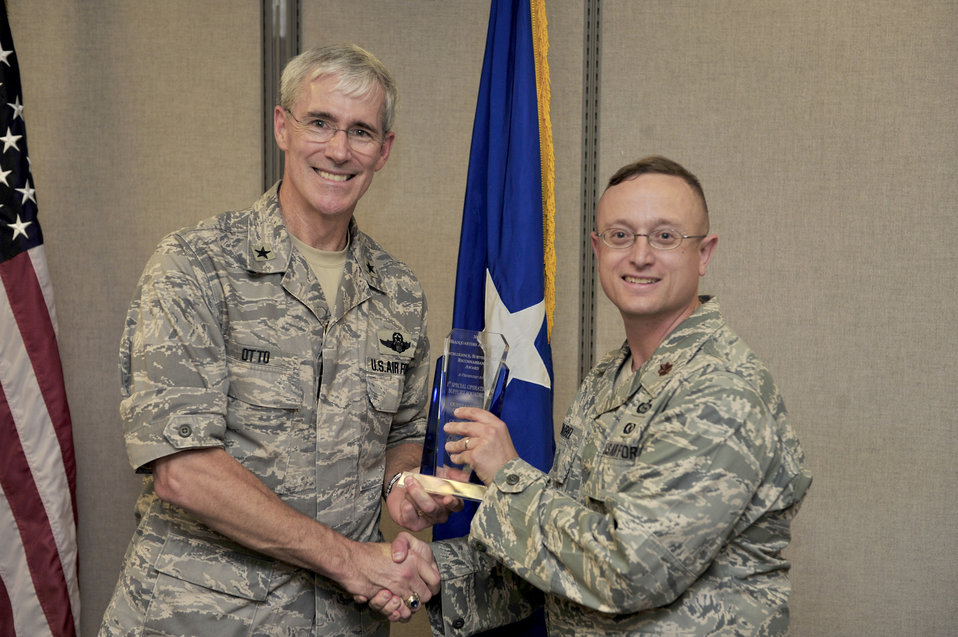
1 SOSS Air Force award

Brig. Gen. Robert Otto presents the 2009 Outstanding Operations Group Intelligence/Operations Support Flight ISR Unit of the Year award to Maj. Erwin Waibel Oct. 14, 2010, at Hurlburt Field Fla. General Otto is the Air Force Intelligence, Surveillance and Reconnaissance Capabilities director and deputy chief of staff for ISR. Major Waibel is the 1st Special Operations Support Squadron intelligence flight commander.